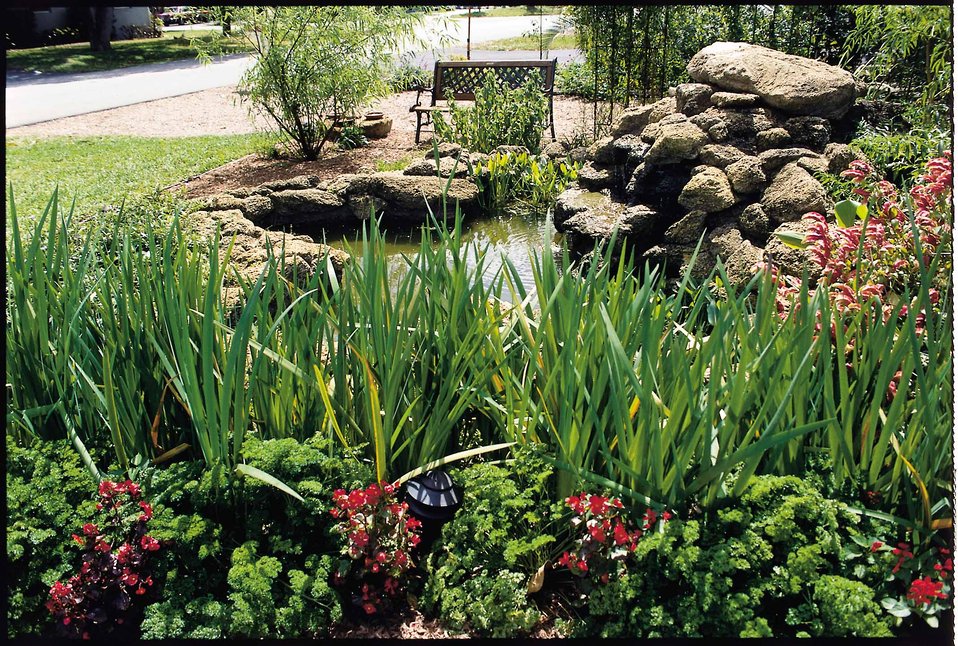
Backyard pond with wetland plants in Palm Beach, Florida.